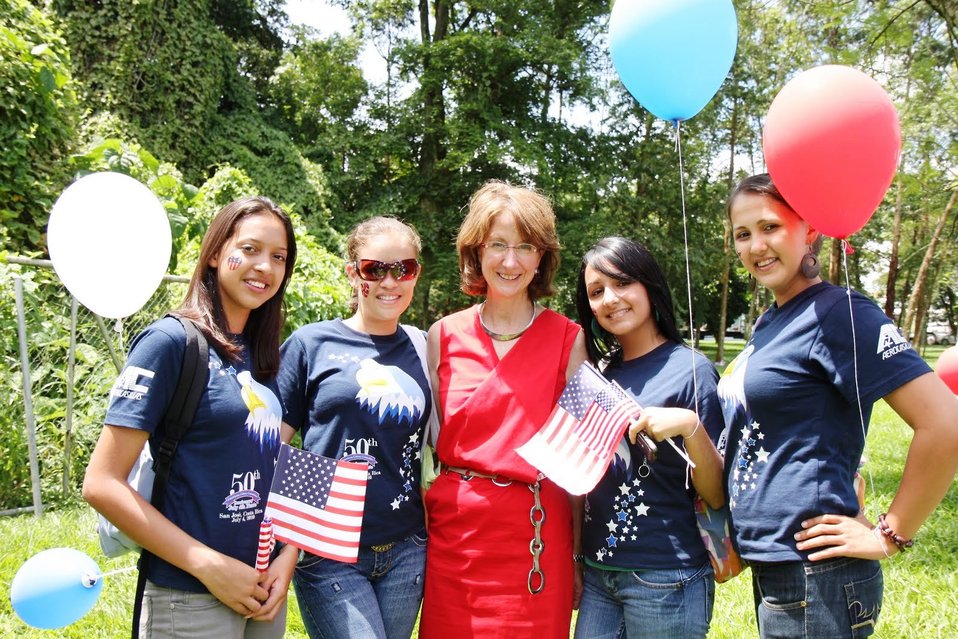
Ambassador Andrew and Students Pose for a Photo

U.S. Ambassador to Costa Rica Anne Slaughter Andrew and students from U.S. Embassy San Jose in Costa Rica's English Access Microscholarship Program pose for a photol during the U.S. Independence Day celebration on July 2, 2010, in San Jose, Costa Rica.